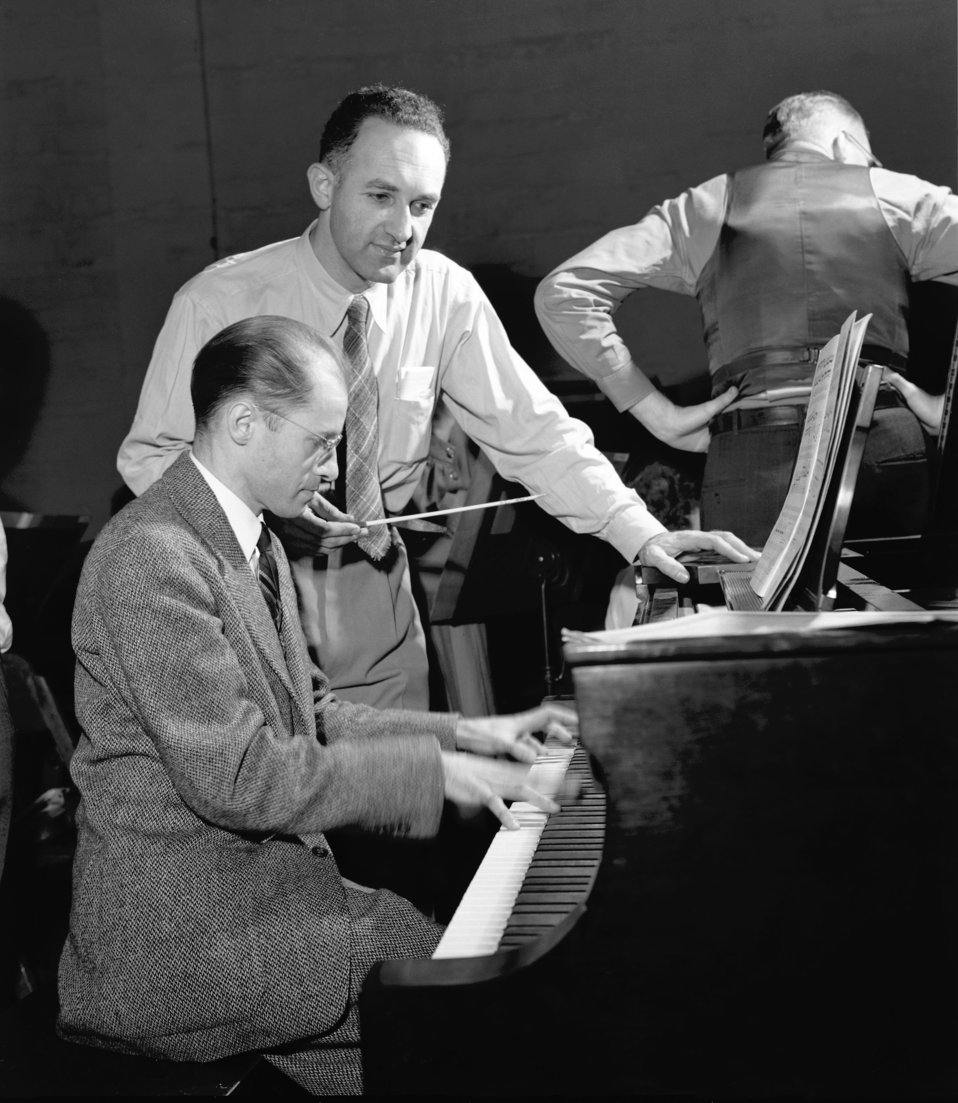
Prof. Albert Schmid on piano and Dr. Waldo Cohn 1948 Oak Ridge

4228 DOE photo Ed Westcott 1-1948 Oak Ridge Tennessee